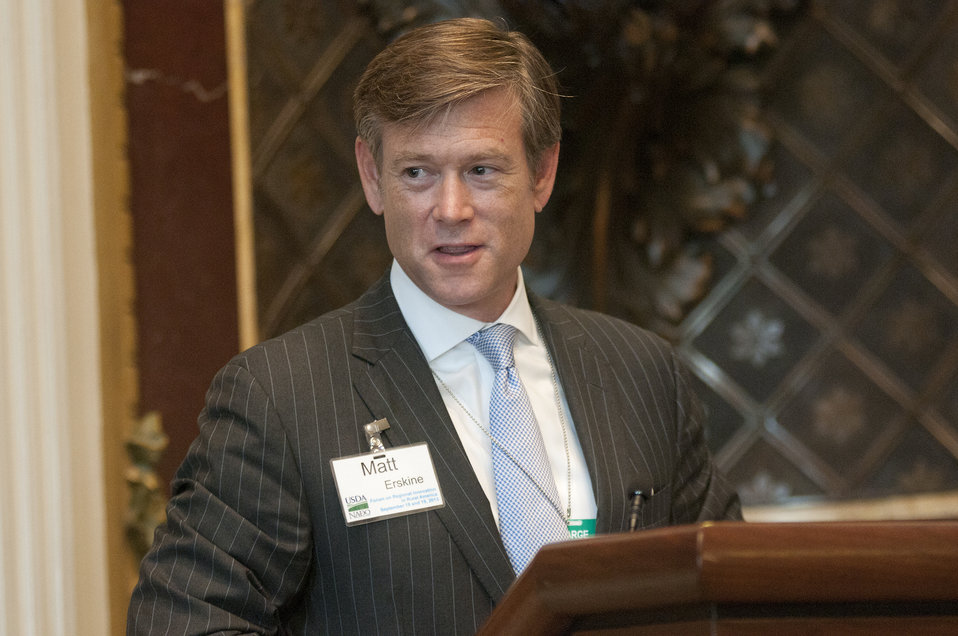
U.S. Economic Development Administration Deputy Assistant Secretary of Commerce for Economic Development Matt Erskine speaks at the 2nd Annual meeting of the White House Rural Forum concerning Regional Innovation at the Executive Office Building in Washington, D.C. on Wednesday, Sep. 18, 2013.